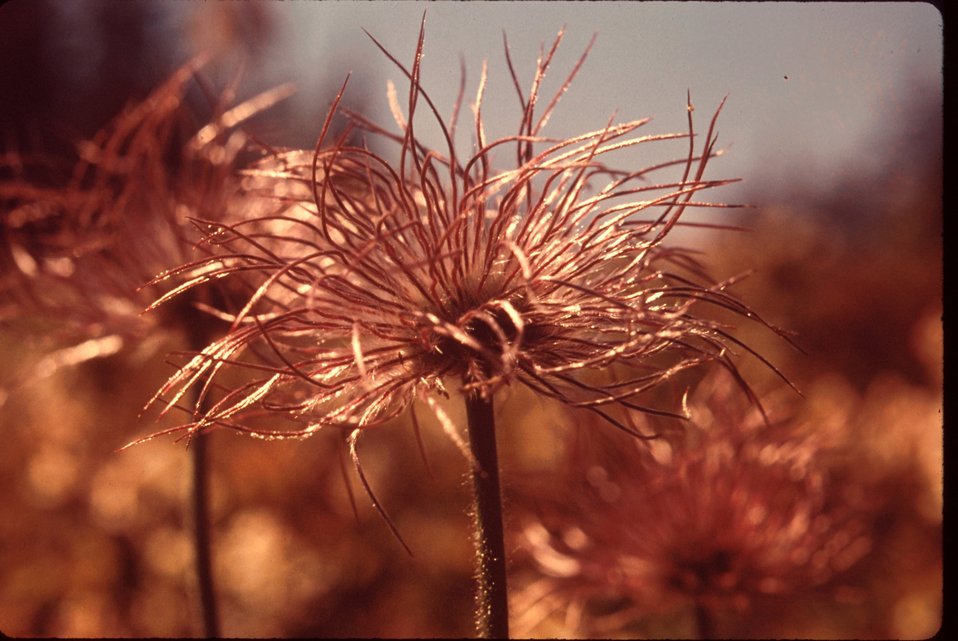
Pasque flower gone to seed Brush, grasses Wildflowers